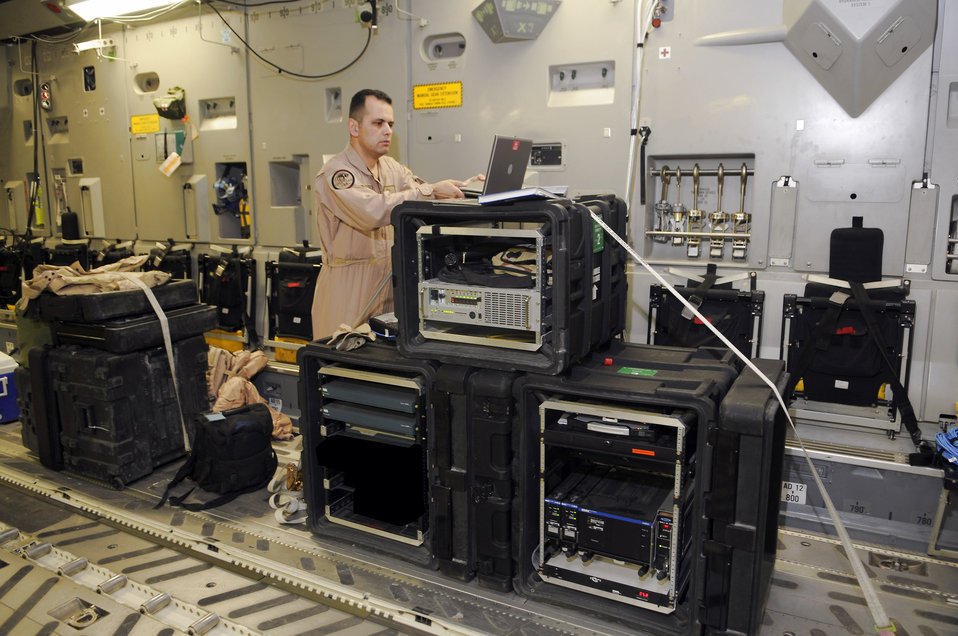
Vipers secure communication for DVs

Staff Sgt. Roland Bazan performs an operational check of a secure internet network Feb 19 while on board a C-17 Globemaster III in Southwest Asia. Sergeant Bazan ensures everything is operable before the aircraft takes off. Sergeant Bazan is a member of the 379th Expeditionary Communications Squadron and is deployed from Schriever Air Force Base, Colo.